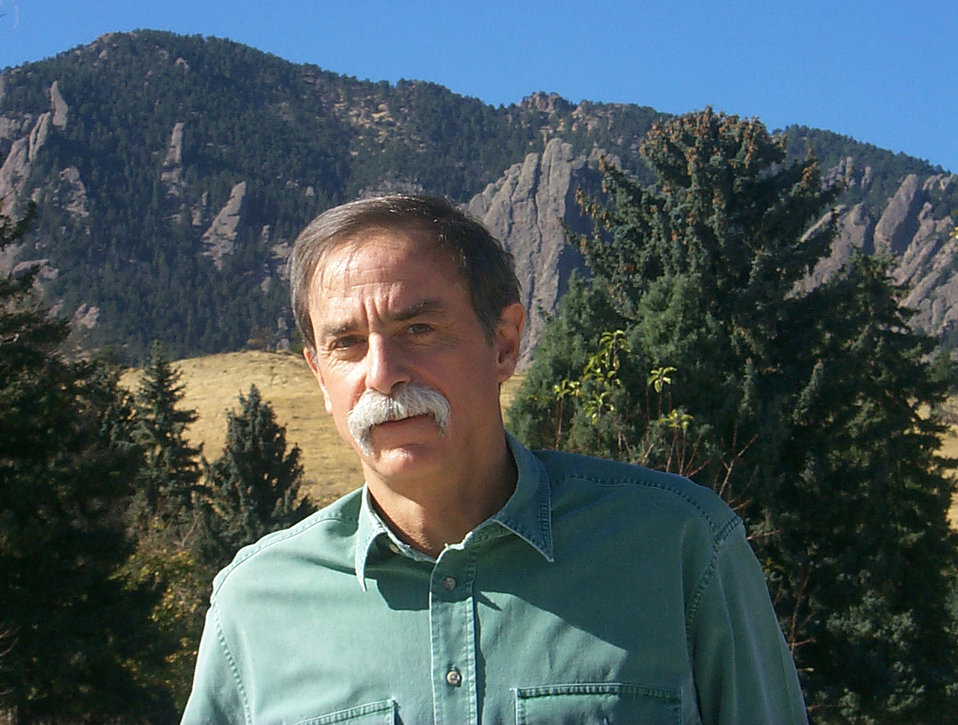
Physicist David J. Wineland of NIST Boulder Laboratories in Colorado